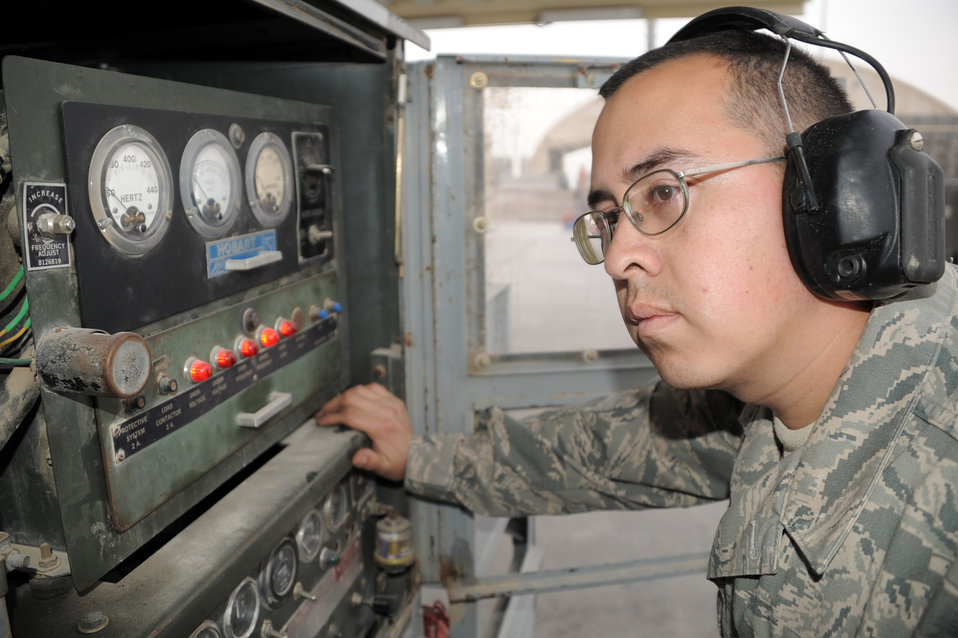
Extending the fight

Staff Sgt. Efrem Flores checks the gauges on his aerospace ground equipment Feb. 5, 2010, while working on a KC-10 Extender at an air base in Southwest Asia. Sergeant Flores is an aerospace ground equipment craftsman with the 380th Expeditionary Maintenance Squadron and is deployed from the 374th Maintenance Squadron at Yokota Air Base, Japan.